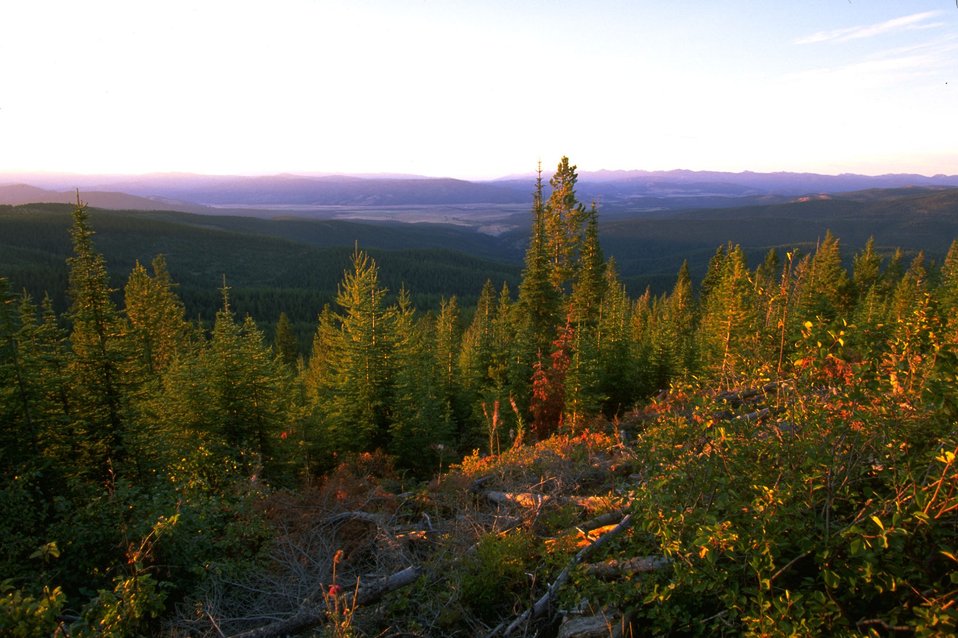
Garnet Back Country Byway view from overlook